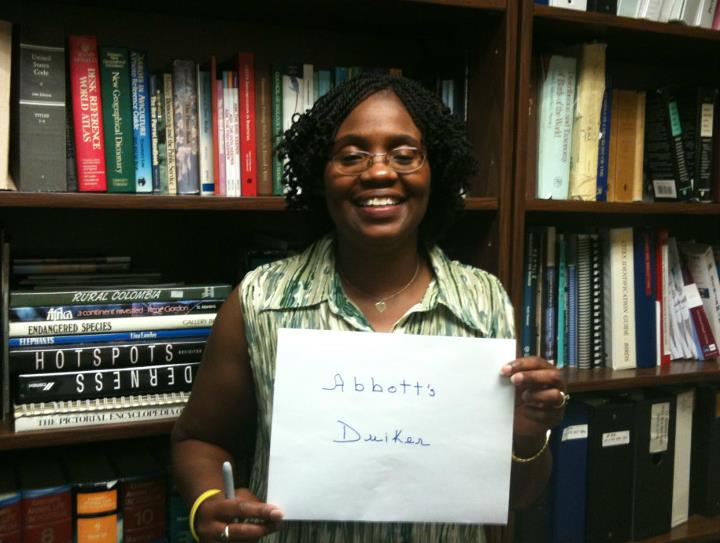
Anna Barry, 'Abbott's Duiker,'

International Affairs participates in FFI's In Our Hands campaign